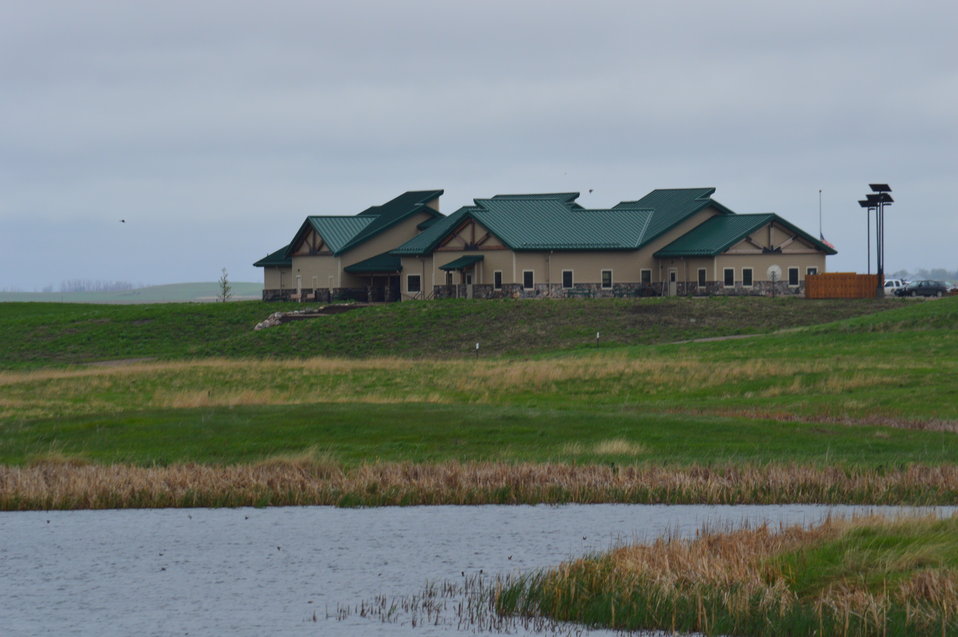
View of the Visitor Center and offices

Scenery and wildlife and Audubon National Wildlife Refuge in North Dakota.